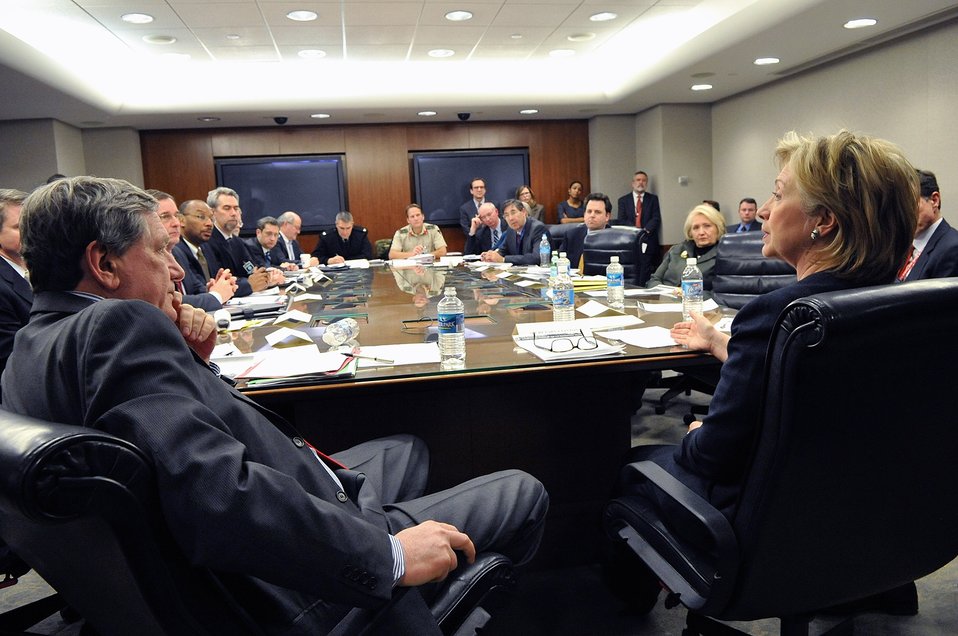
Secretary Clinton Attends Weekly 'SRAP' Meeting

U.S. Secretary of State Hillary Rodham Clinton attends a weekly meeting hosted by the Office of the Special Representative for Afghanistan and Pakistan at the U.S. Department of State in Washington, DC February 1, 2010.